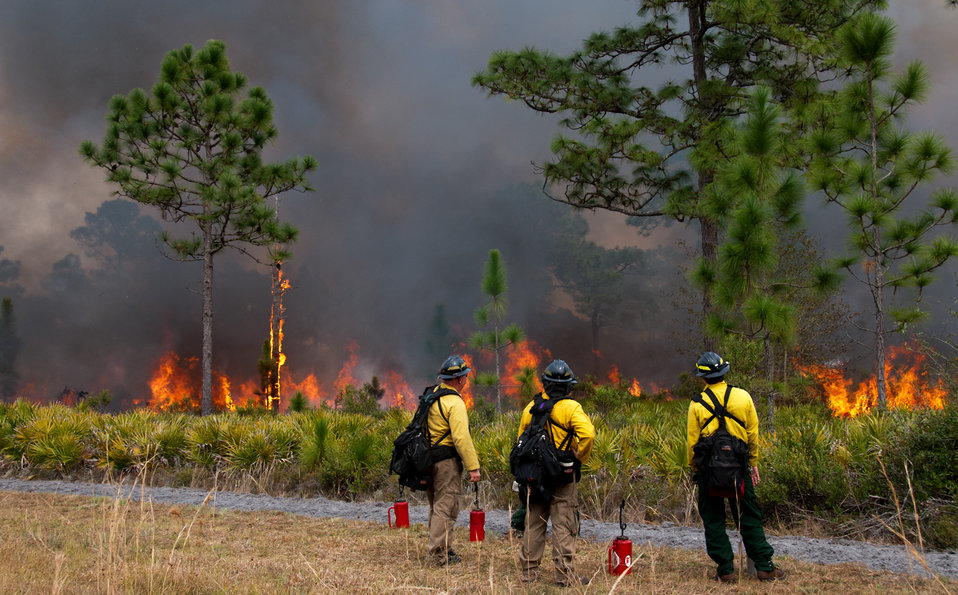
Lake Woodruff Volusia 5 Prescribed Fire Febuary 2014

USFWS firefighters watch a pocket of unburned vegetation as they wait for it to complete burning. On February, 12 2014 USFWS firefighters conducted a 137 acre prescribed fire at Lake Woodruff NWR to reduce the wildfire risk and enhance the wildlife habitat on the southern end of the refuge.